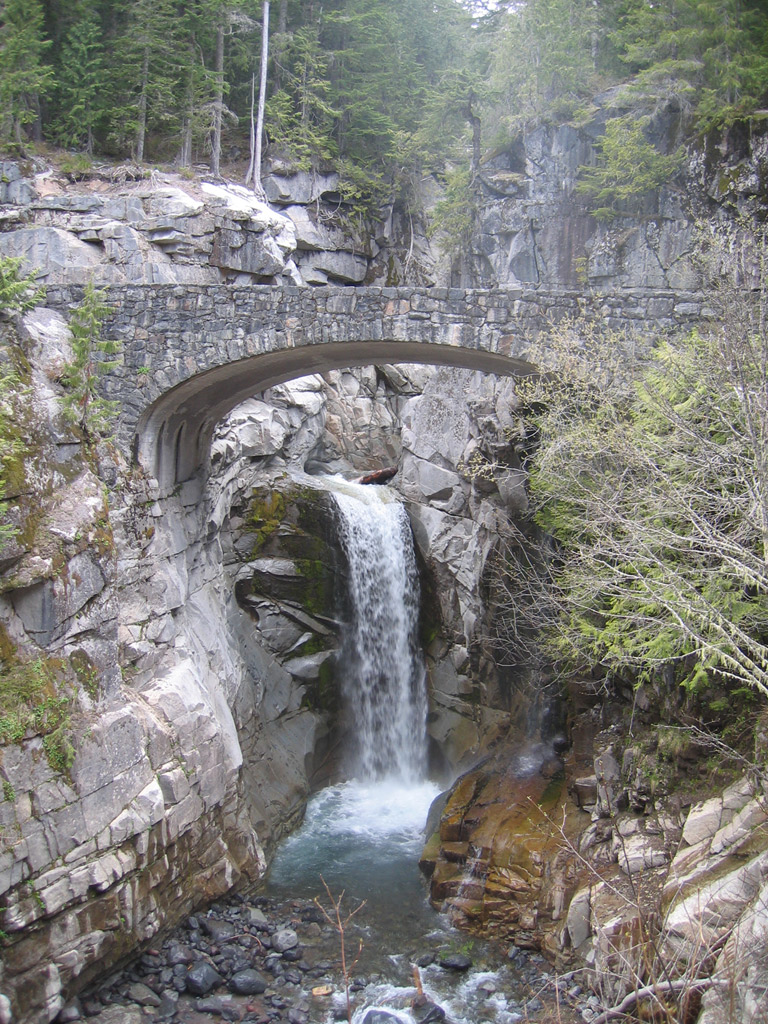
Uploaded by request of Jennifer Kyff

Taken at Mount Rainier National Park

The park has a peaceful serene feel to it. There feels like there is so much life everywhere.